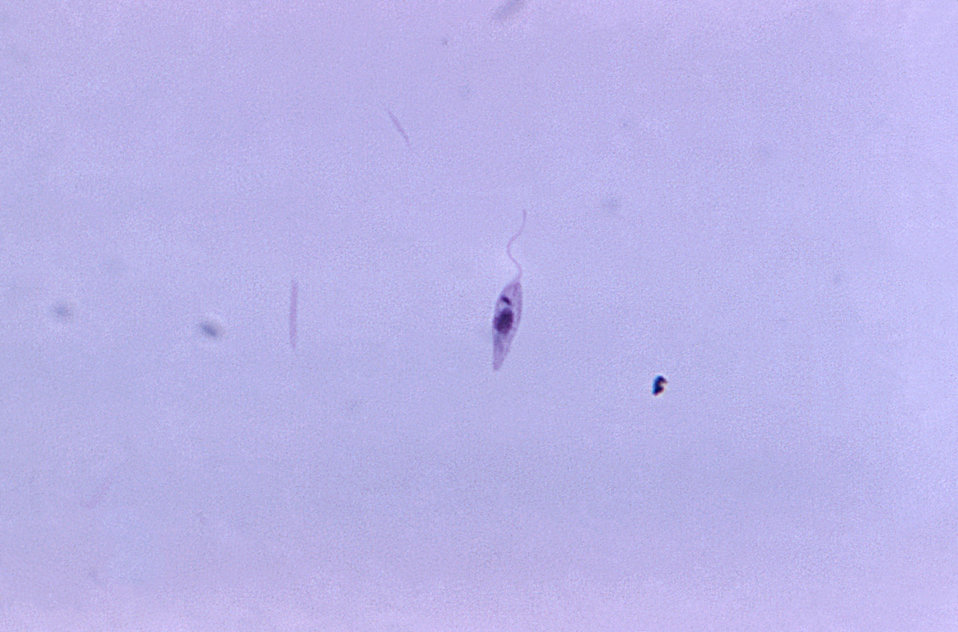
This micrograph revealed the presence of a single leptomonad-staged, i.e. promastigote, Leishmania sp. protozoan.